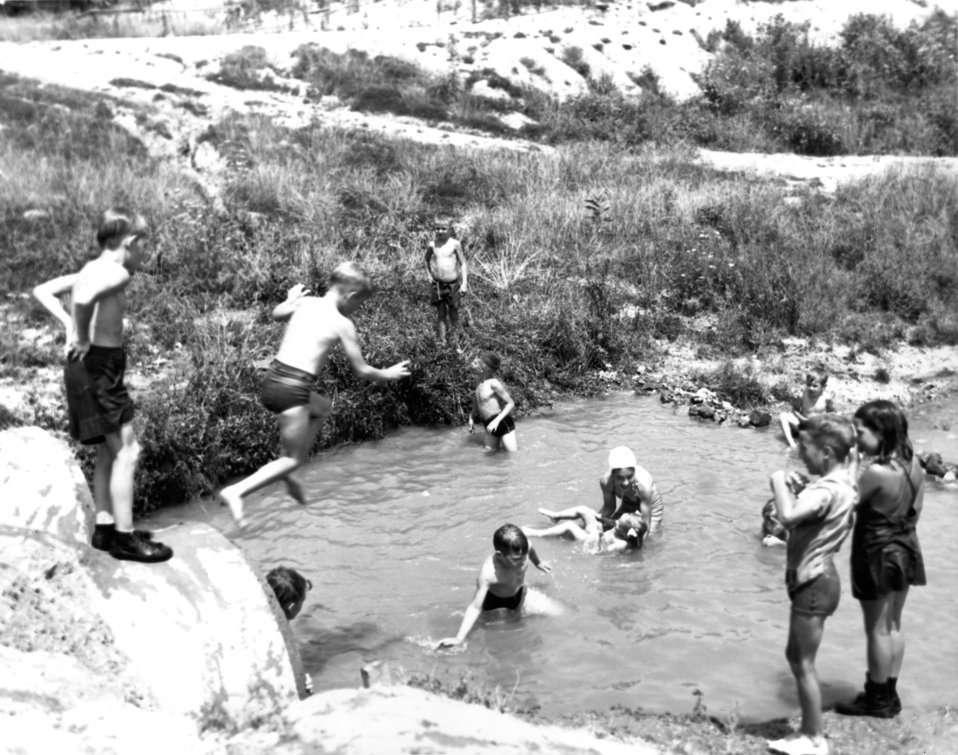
Recreation at Oak Ridge